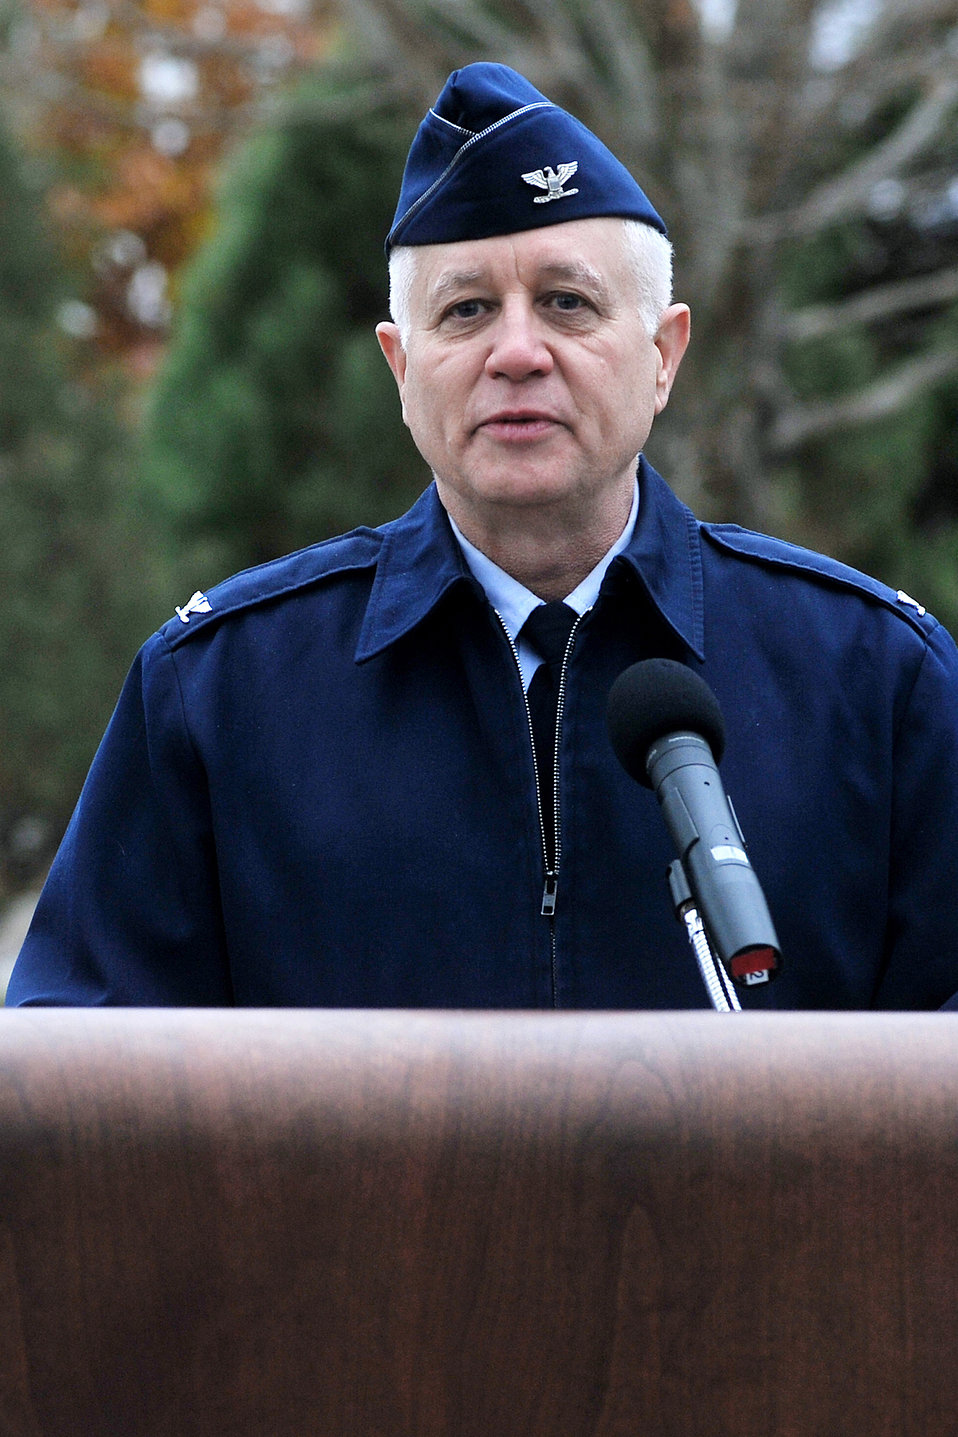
Chaplain (Col) Carl Swanson

Chaplain (Col.) Carl Swanson addresses the audience at a special dedication ceremony Nov. 29, 2010, at Offutt Air Force Base, Neb. Chaplain Swanson is the 55th Wing chief chaplain.